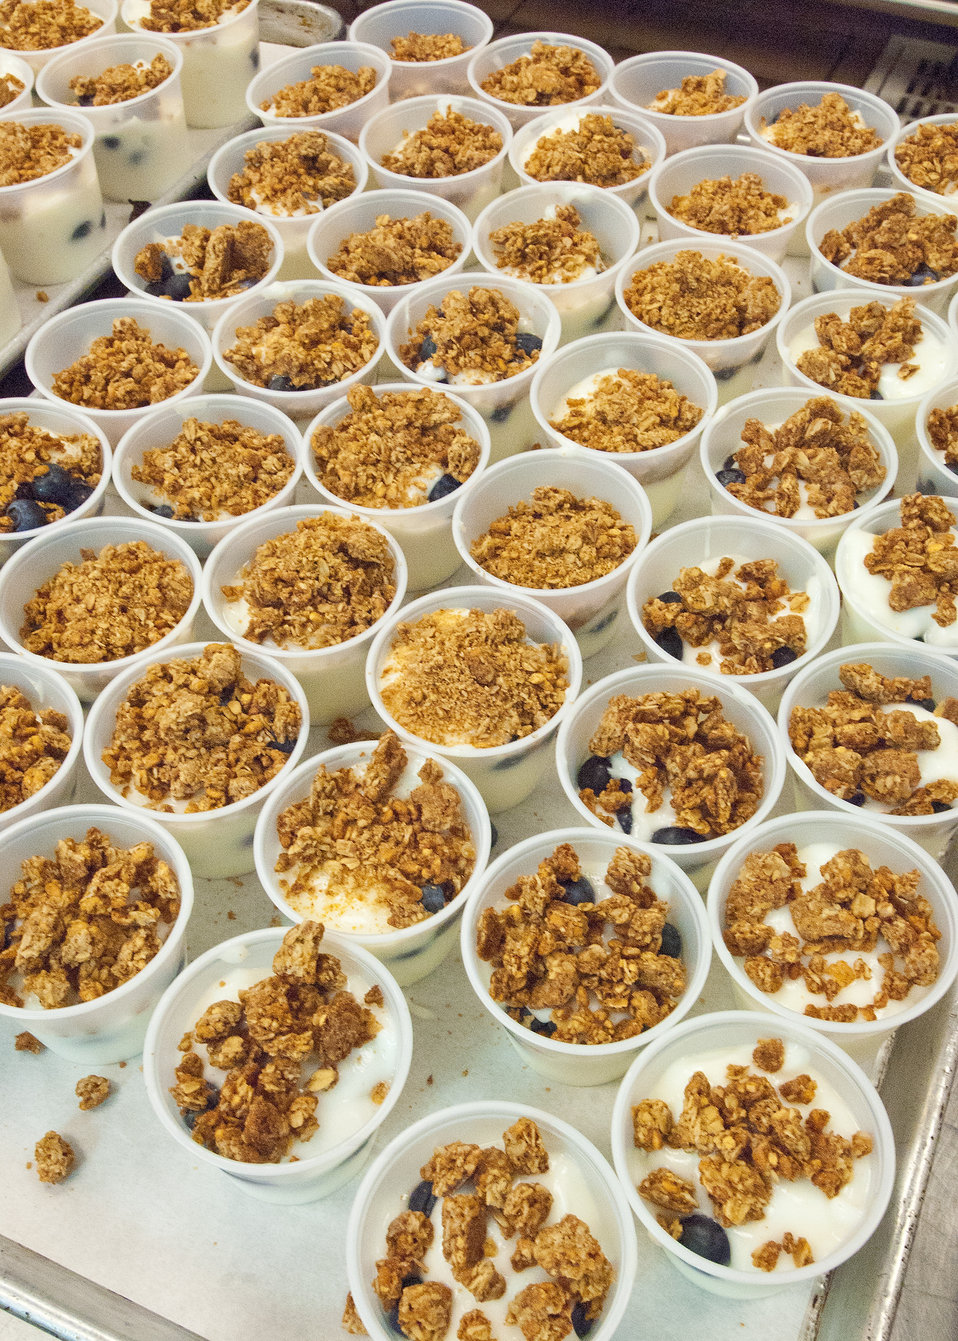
Yogurt, fruit and granola parfait cups for the National School Lunch Program at Washington-Lee High School in Arlington, Virginia, on Wednesday, October 25, 2011. The National School Lunch Program is a federally assisted meal program administered by the United States Department of Agriculture, Food and Nutrition Service operating in public, nonprofit private schools and residential child care institutions. It provides nutritionally balanced, low-cost or free lunches to children each school day.